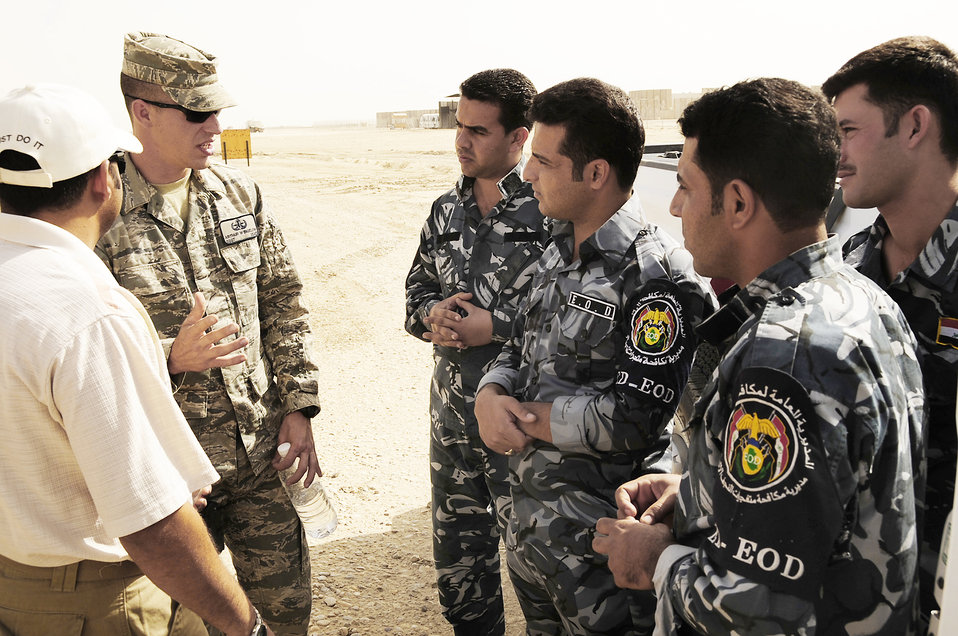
Airmen train Iraqi police

Staff Sgt. Arthur Bigelow explains a training scenario to Iraqi police explosive ordnance disposal technicians during a block of training conducted by the Air Force EOD members Nov. 4, 2009, at Forward Operating Base Cedar, Iraq. Sergeant Bigelow is a 407th Expeditionary Civil Engineer Squadron EOD technician deployed from Fairchild Air Force Base, Wash.